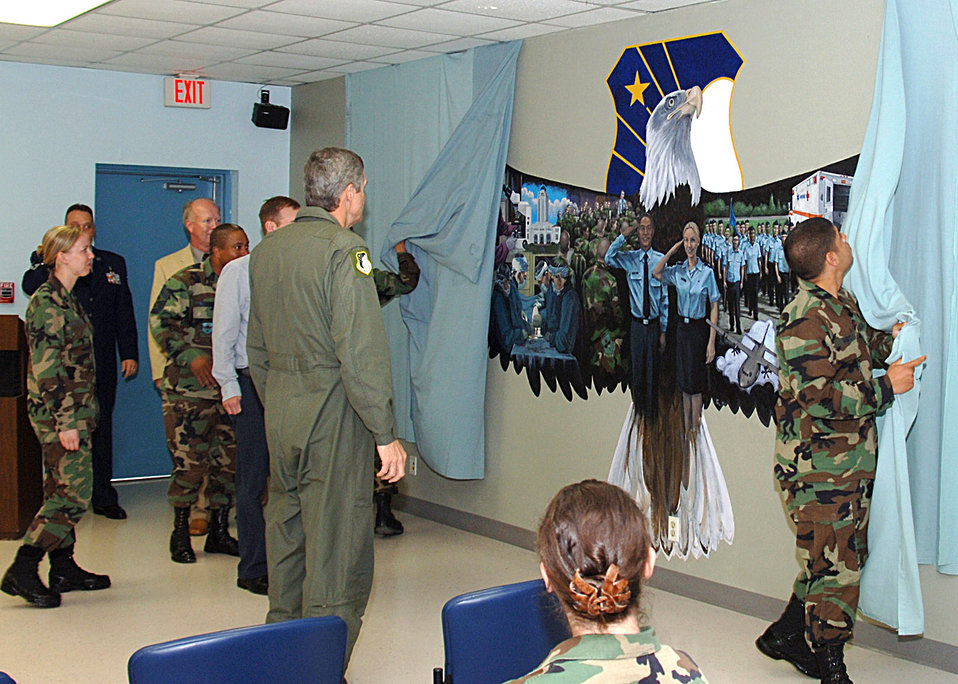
Artist honors Air Force medical field with 20-foot mural

Security forces students, Airman Basics Adrien Quiles and Joseph Gussman unveil the finished Air Force Medical Service mural during a ceremony held April 24 at Camp Rissington on Lackland Air Force Base, Texas. The mural, created by artist Jacob Galey spans a 20-foot section of wall in the 59th Medical Wing Readiness Division's training classroom. It depicts the past, present and future of the medical corps.